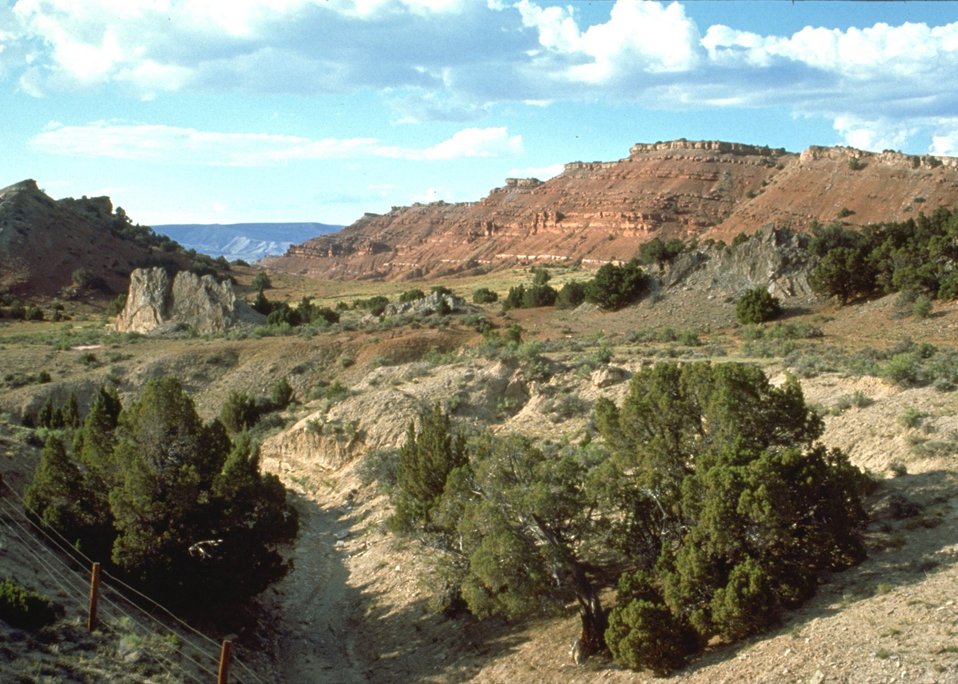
View along the Red Gulch/Alkali Back Country Byway, Worland Field Office.